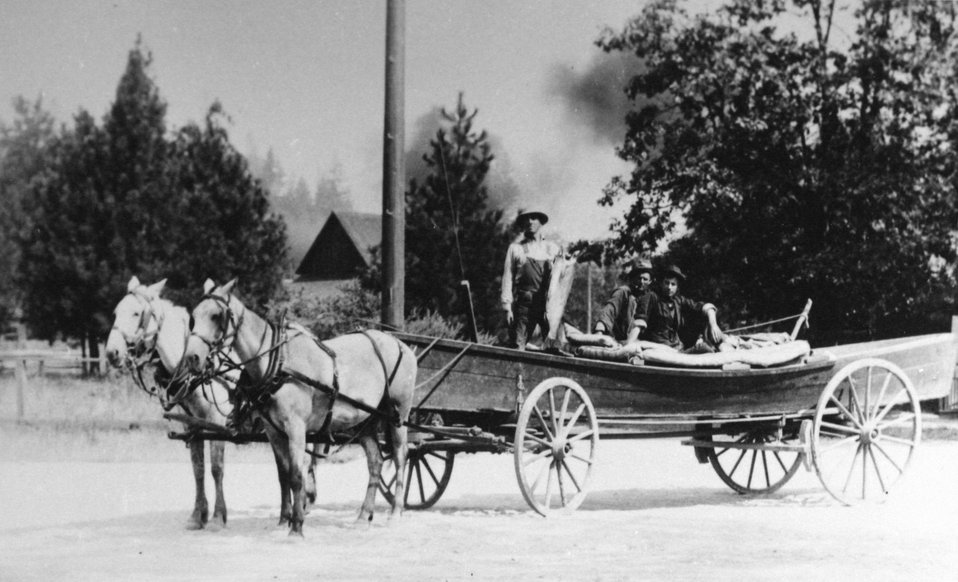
Hauling a fishing boat after a trip down the Rogue River